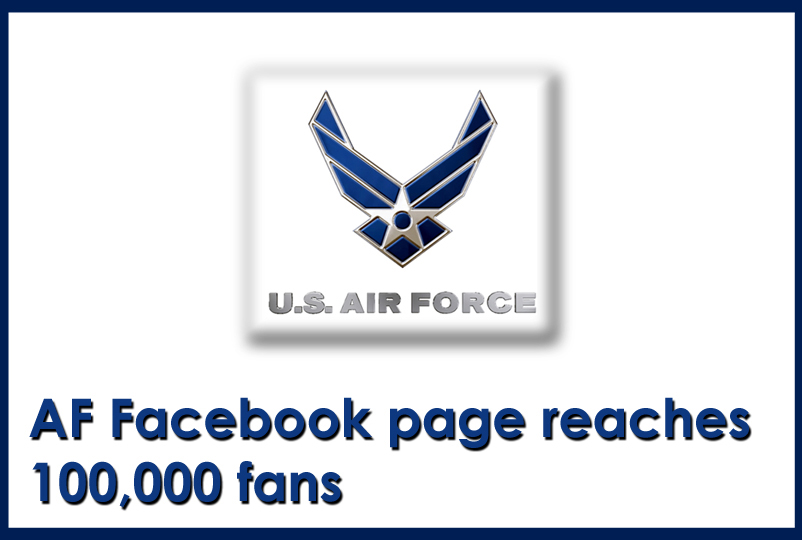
AF Facebook page tops 100,000 fans